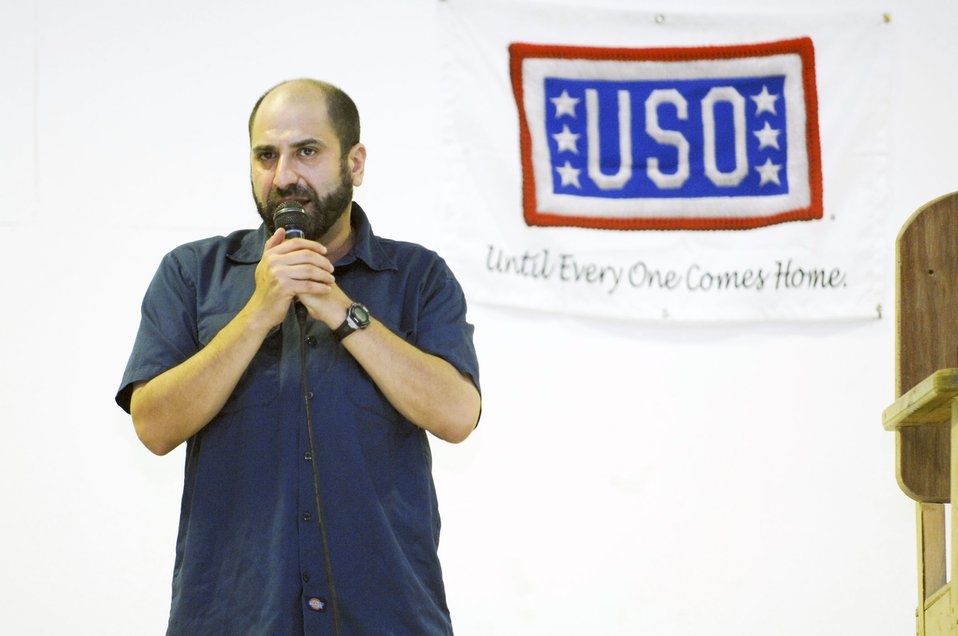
USO-sponsored show keeps 'em laughing

Dave Attell performs his comedy routine for more than 700 Soldiers and Airmen during a USO show July 25 at Camp Adder, Iraq. Mr. Attell is traveling with fellow comedian Scott Kennedy. This was the second of eight tour stops in theater. Mr. Attel is star of Comedy Central's